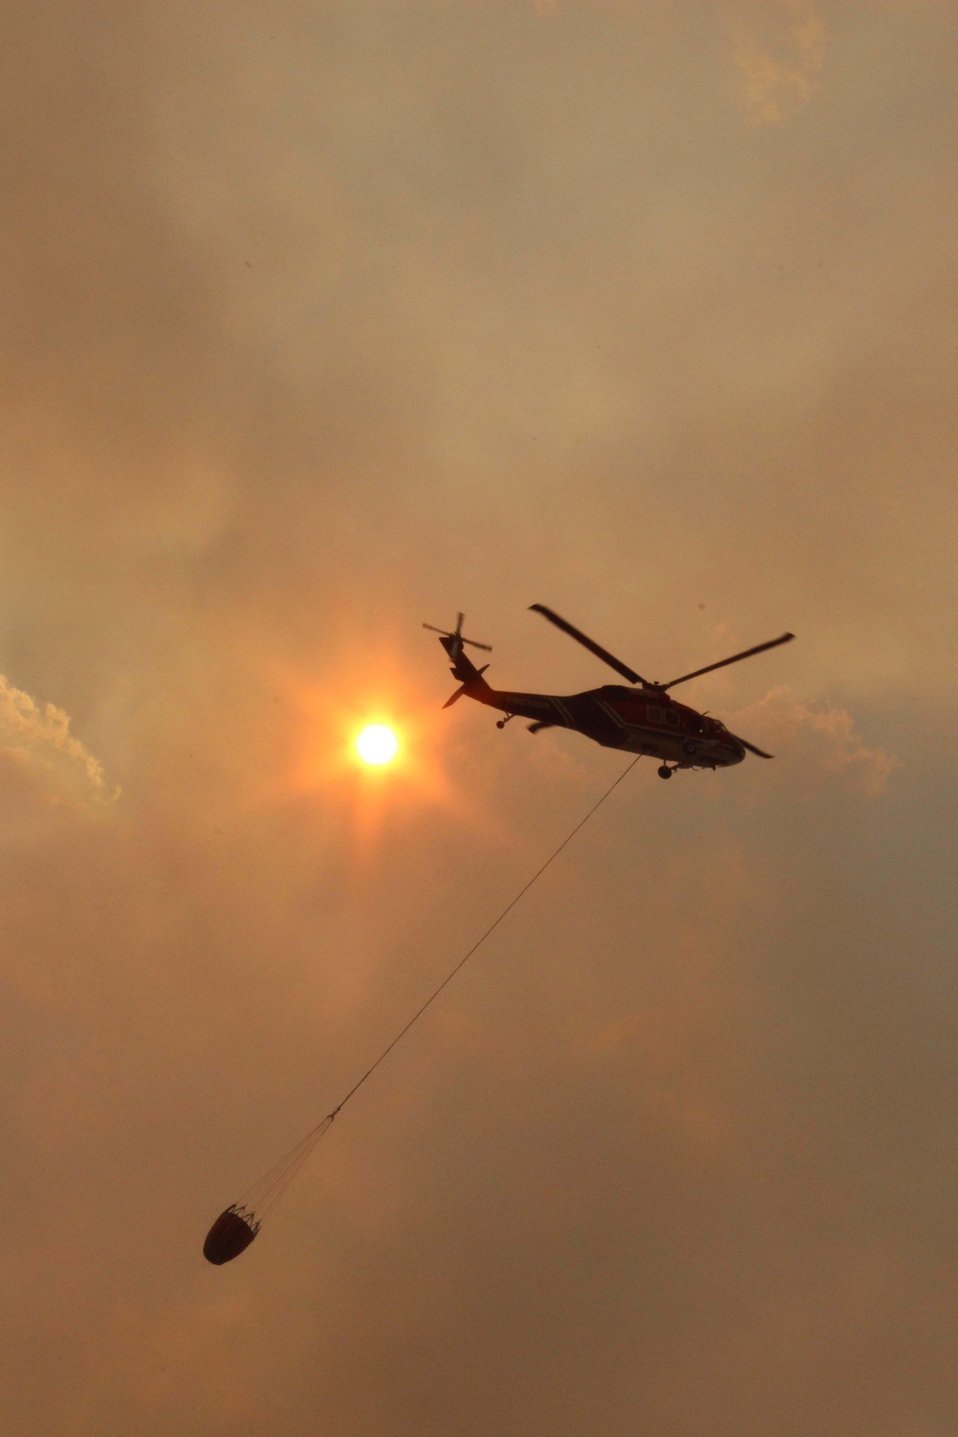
Helicopter supports efforts of ground firefighters at the Rim Fire. The Rim Fire in the Stanislaus National Forest near in California began on Aug. 17, 2013 and is under investigation. The fire has consumed approximately 256,169 acres and is 84% contained.